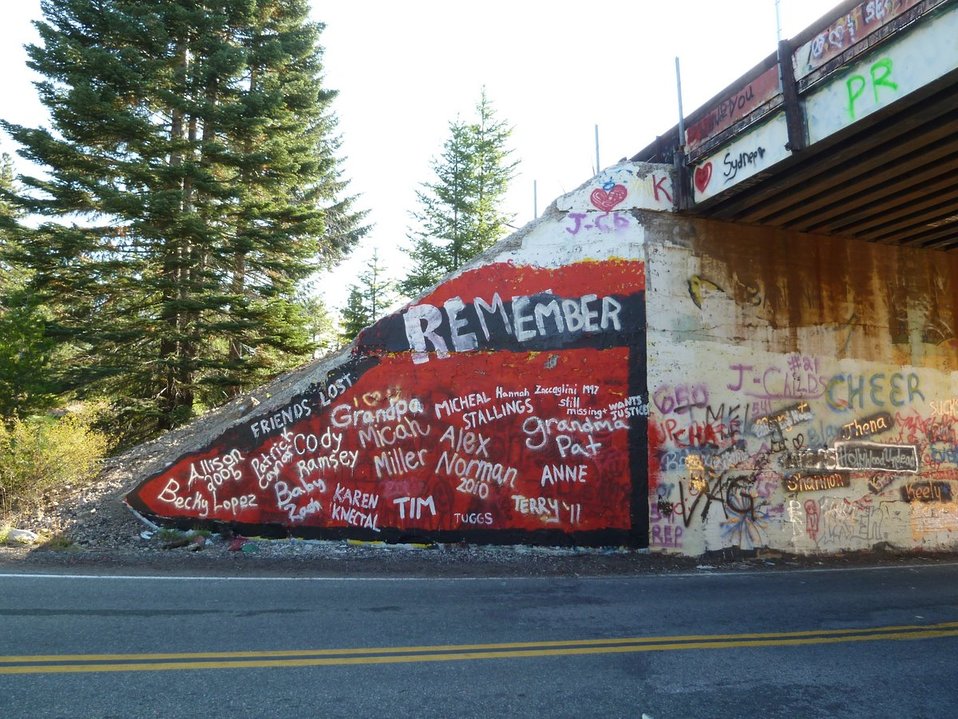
Siskiyou County, CA Drug Facts Week Photos

Students from the leadership class at Mt. Shasta High School painted this bridge to honor those who lost their lives to drug addiction. They also shatter the myths about drug and tobacco companies, and encourage teens to get the facts by visiting the NIDA website for teens.